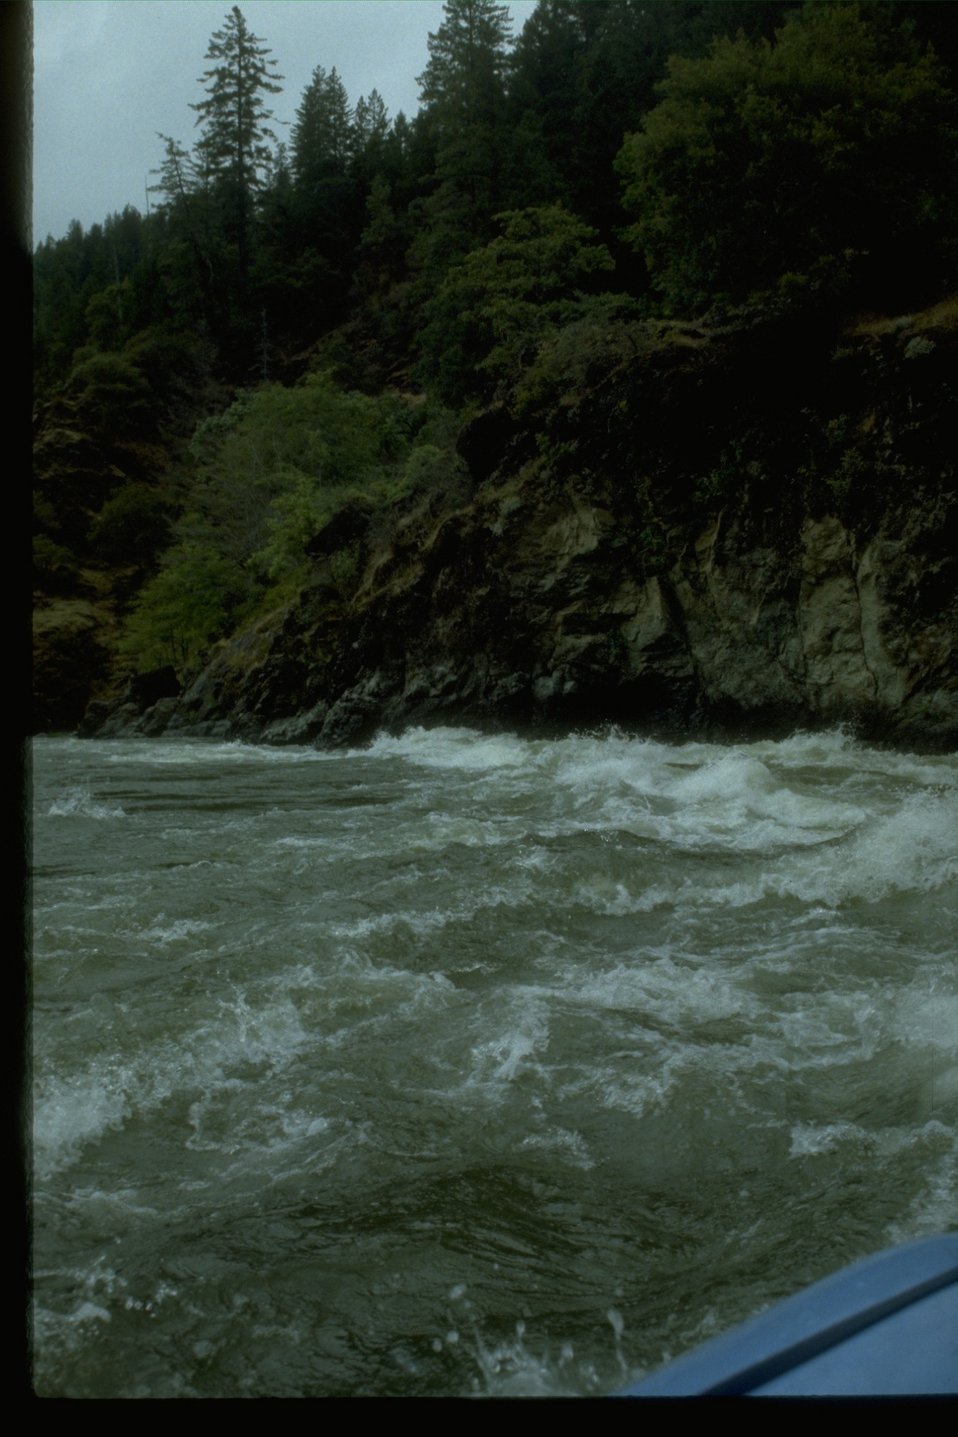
Wild whitewater section of the Rogue River.